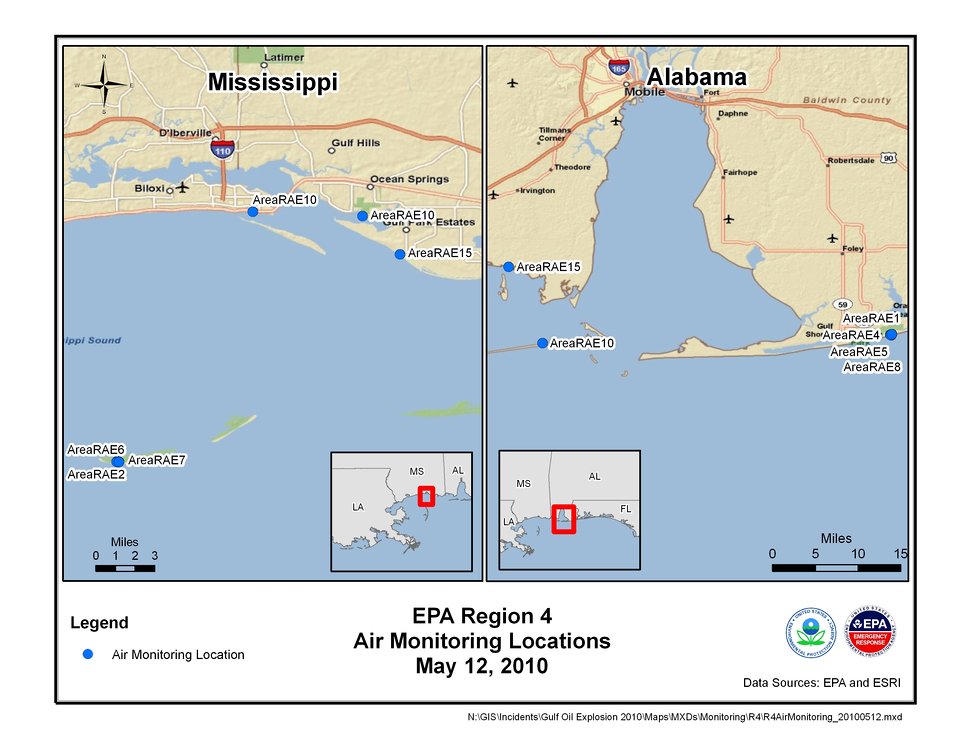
EPA Air Monitoring Locations May 12, 2010